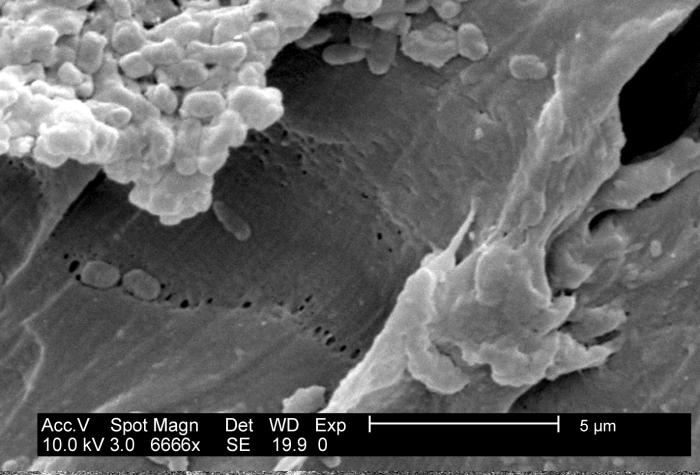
This SEM depicts an E. coli (ATCC 11775) biofilm grown on PC (polycarbonate) coupons using a CDC biofilm reactor.